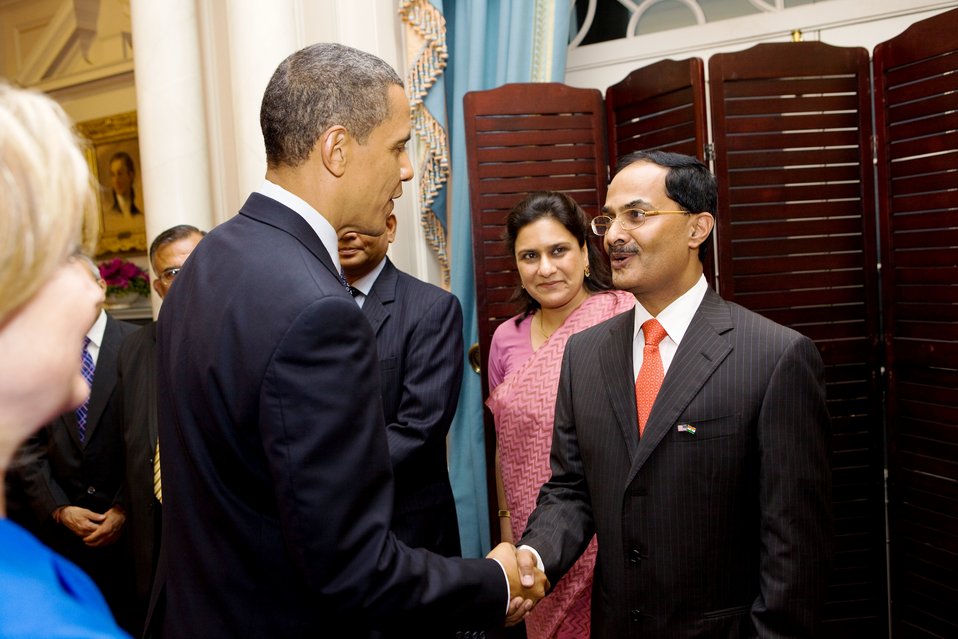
President Obama Shakes Hands With High-Ranking Indian Delegation Member

U.S. President Barack Obama shakes hands with a high-ranking member of the Indian Delegation at the U.S.-India Strategic Dialogue reception at the U.S. Department of State in Washington, D.C., on June 3, 2010.